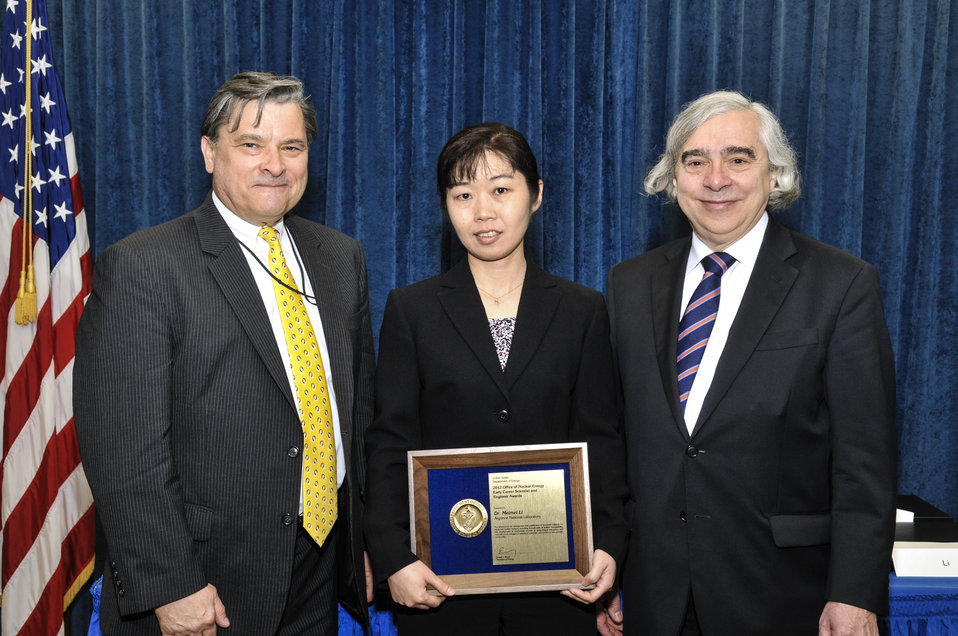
PECASE Awards: DOE Secretary E. Moniz on April 14, 2014